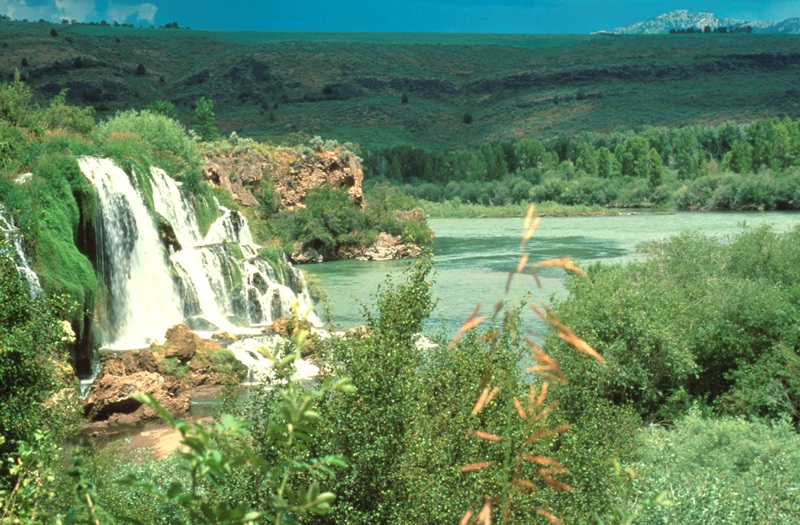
Fall Creek Falls Snake River Canyon